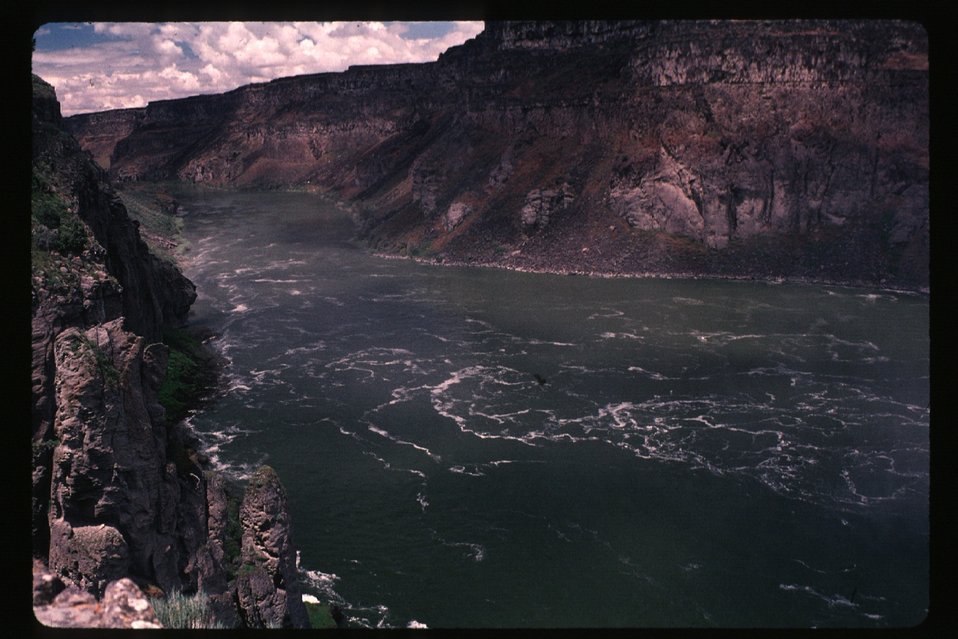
Water falls Rapids Recreation Scenic Snake River Jarbidge Field Office LSRD Lower Snake River District